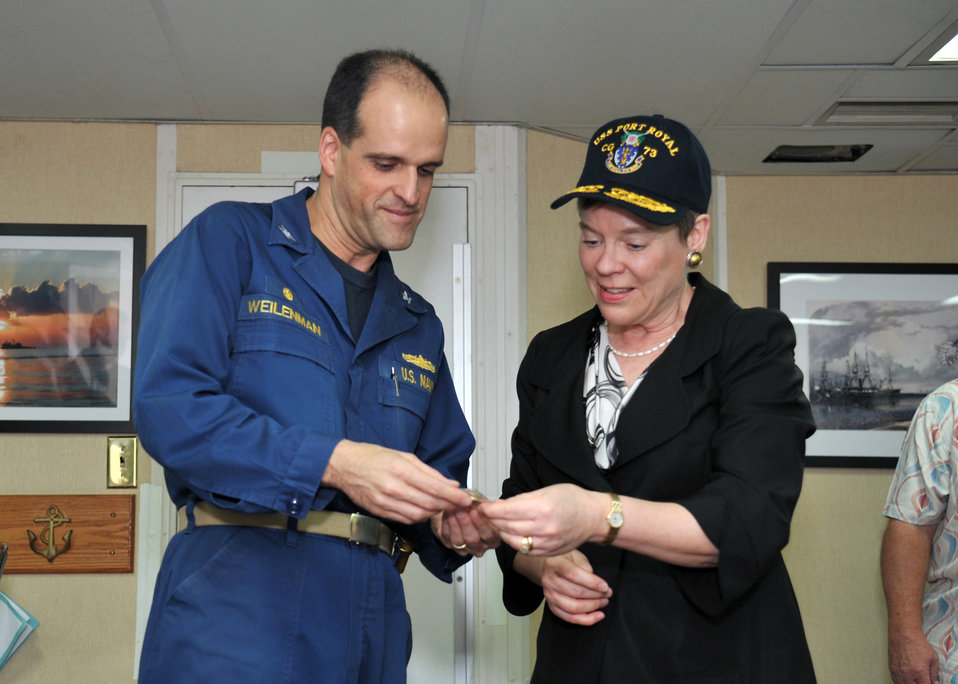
Under Secretary Gottemoeller Receives a Commemorative Ship's Coin From Capt. Weillenman

Under Secretary of State for Arms Control and International Security Rose Gottemoeller receives a commemorative ship’s coin from Capt. Eric Weillenman, commanding officer of USS Port Royal (CG 73), after touring the ship at Pearl Harbor on February 27, 2014. Under Secretary Gottemoeller met with senior military commanders and toured commands during her visit to Hawaii.